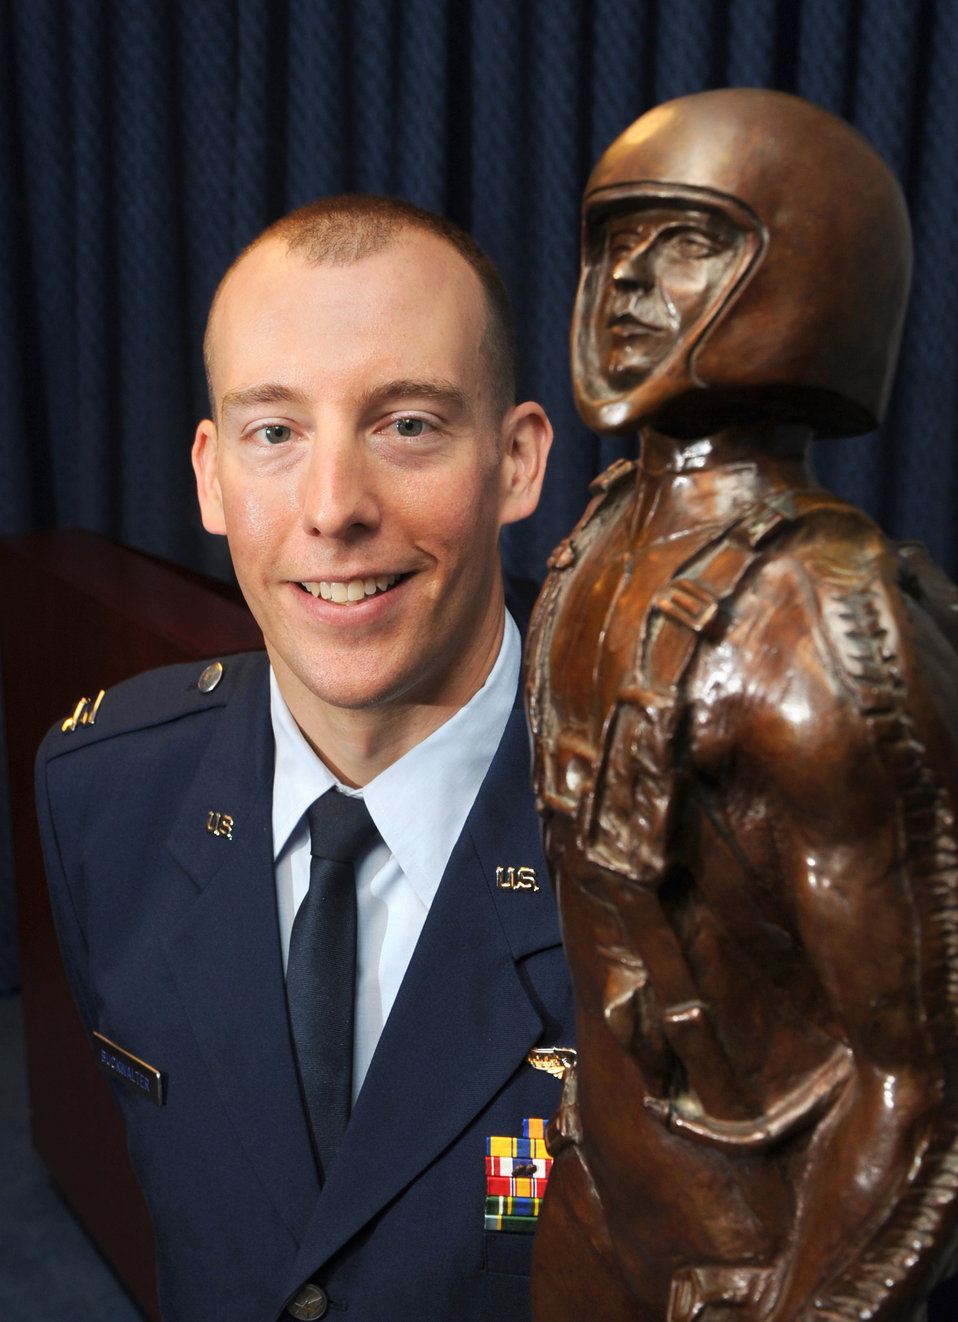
2011 Kolligian Trophy

Capt. Hans Buckwalter was named the 2010 recipient of the Koren Kolligian Jr. Trophy June 29, 2011, during a ceremony in the Pentagon. The award recognizes outstanding feats of airmanship by an aircrew member who by extraordinary skill, exceptional alertness, ingenuity or proficiency, averts or minimizes the seriousness of an aircraft accident in terms of injury, loss of life, aircraft or property damage.